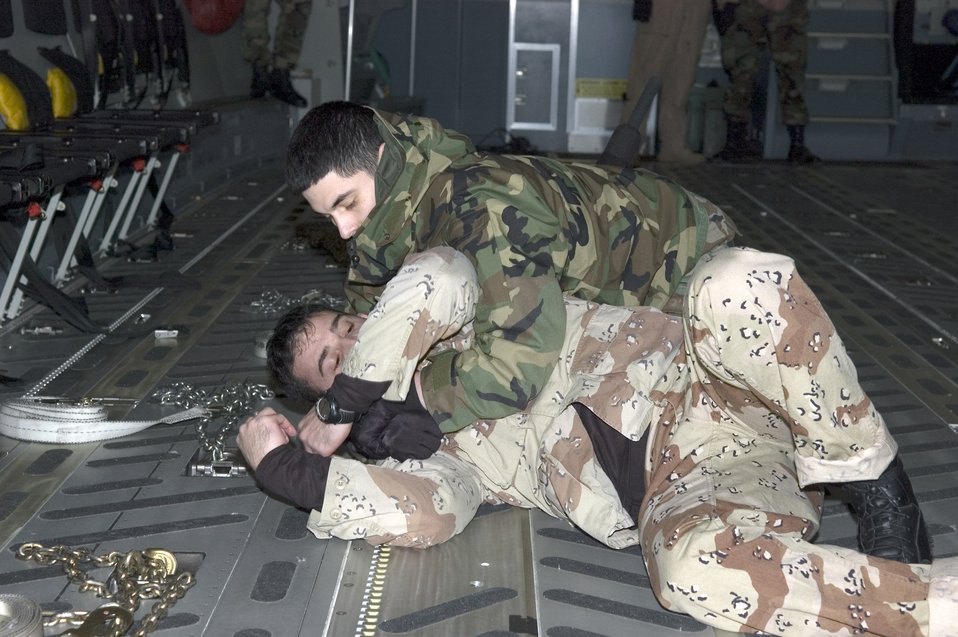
Security forces Airmen complete 'Fly Away' course at Fort Dix

A security forces Airman subdues an intruder during anti-hijacking training Jan. 16 at McGuire Air Force Base, N.J. The Airman is a student in the Air Mobility Warfare Center's Fly Away Security Training Course. This was the first FAST course taught by the AMWC to prepare the students prior to their departure for deployment to Iraq.